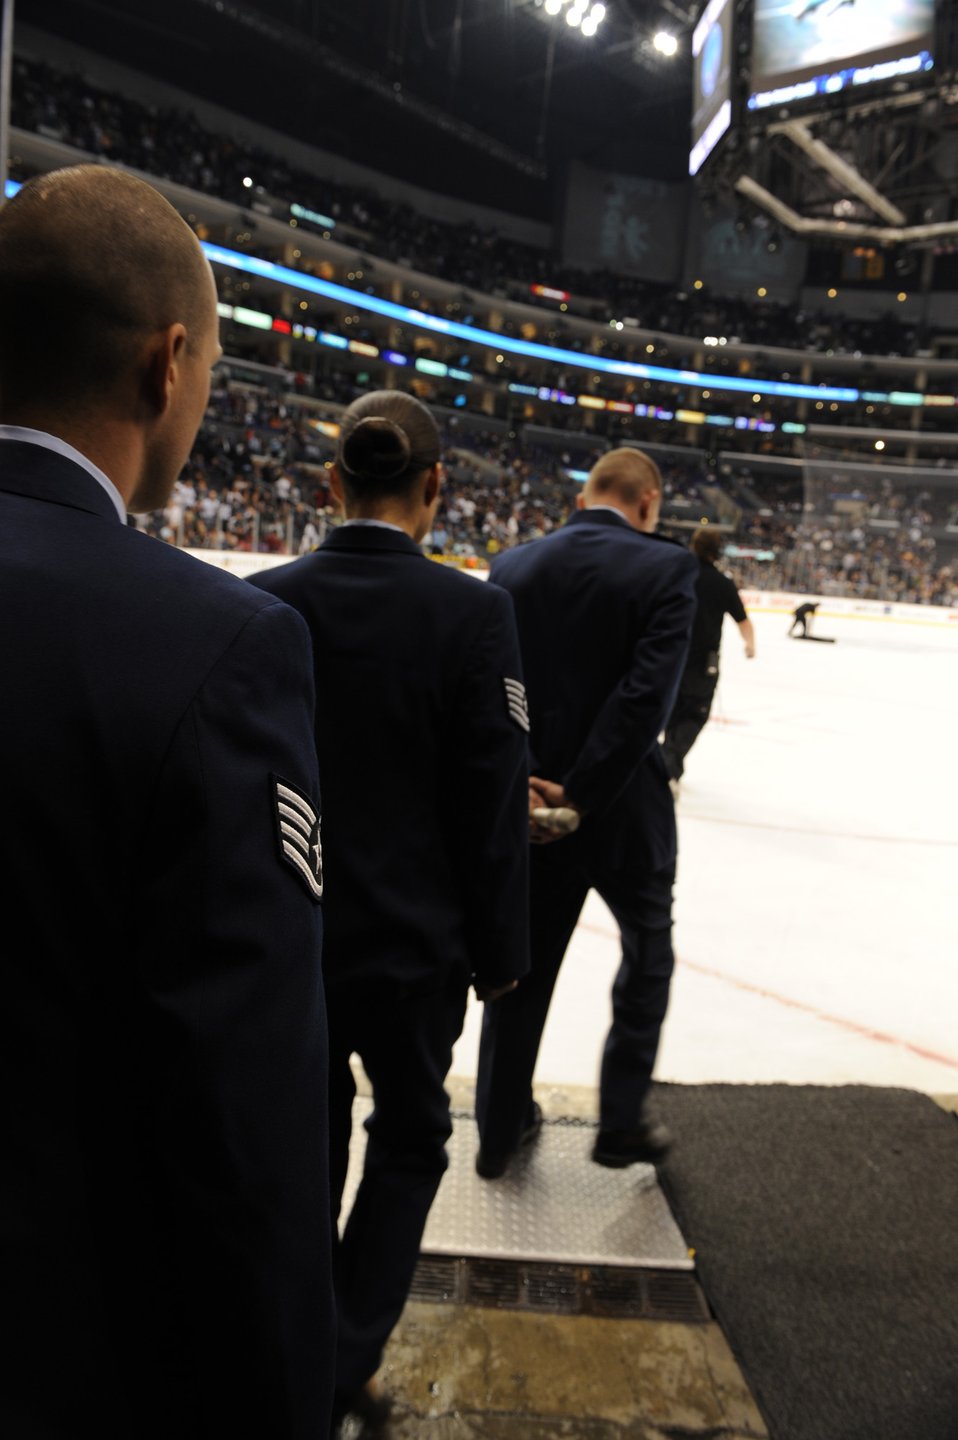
Airmen reenlist during a Los Angeles Kings hockey game

Col. John Odey leads Tech. Sgt. Surita Rorie and Staff Sgt. Robert Coddington onto the ice of the Staples Center, Los Angeles, Calif., Nov. 15. Sergeants Rorie and Coddington reenlisted during a Los Angeles Kings vs. Nashville Predator game as part of Air Force Week Los Angeles. Colonel Odey is the 95th Communications Group Commander, Edwards Air Force Base, Calif. Sergeants Rorie and Coddington are stationed at Edwards Air Force Base, Calif. Air Force Week Los Angeles is an event designed to educate the local population about the Air Force's capabilities and missions through various activities and exhibitions all over the Los Angeles area. It provides an up close and personal look at the men and women of the Air Force serving worldwide in the defense of freedom. Air Force Week Los Angeles runs from Nov. 14 to 21.